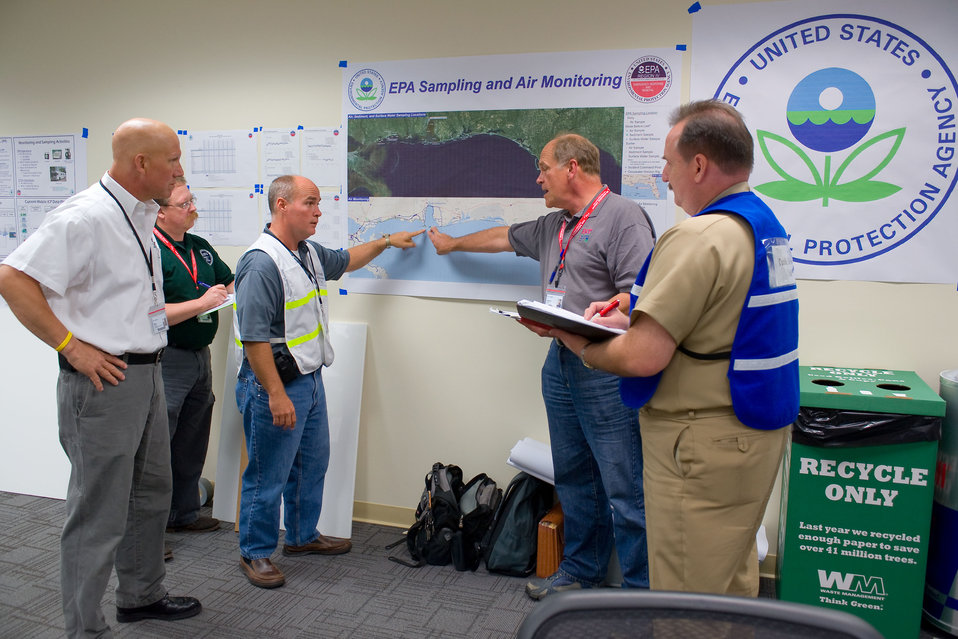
June 3, Incident Command Post Mobile, Ala

Responders go over the days sampling plan.